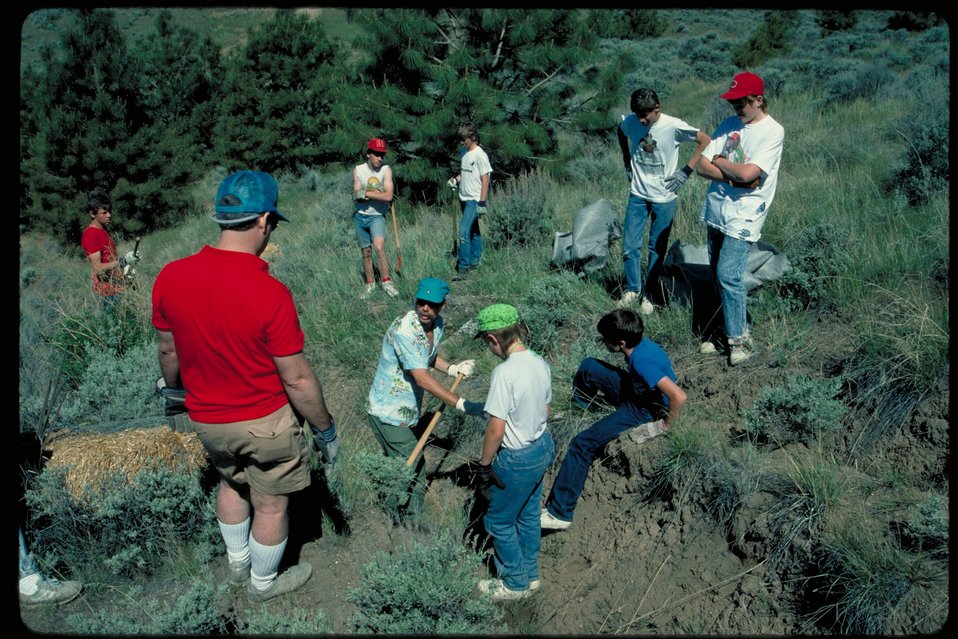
Volunteer cleanup Boise Front Four Rivers Field Office LSRD Lower Snake River District